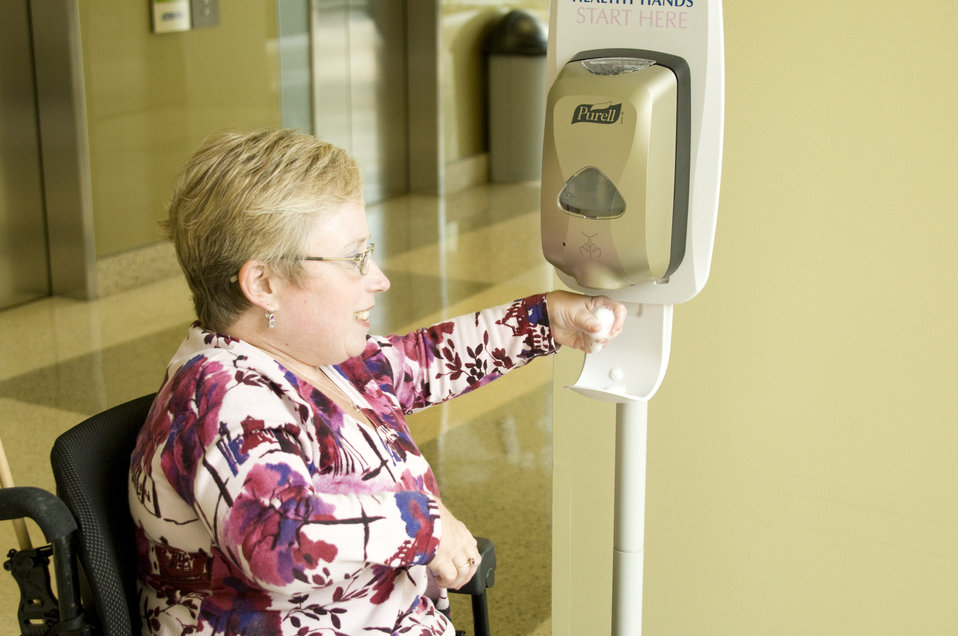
Before leaving one of the Centers for Disease Control's (CDC) Atlanta, Georgia-based facilities, this woman seated in her wheelchair, had paused for just a moment to obtain some hand-sanitizer from an automatic dispenser. Note the height at which the dispenser was situated, making accessibility to its contents quite easy for any interested passersby.